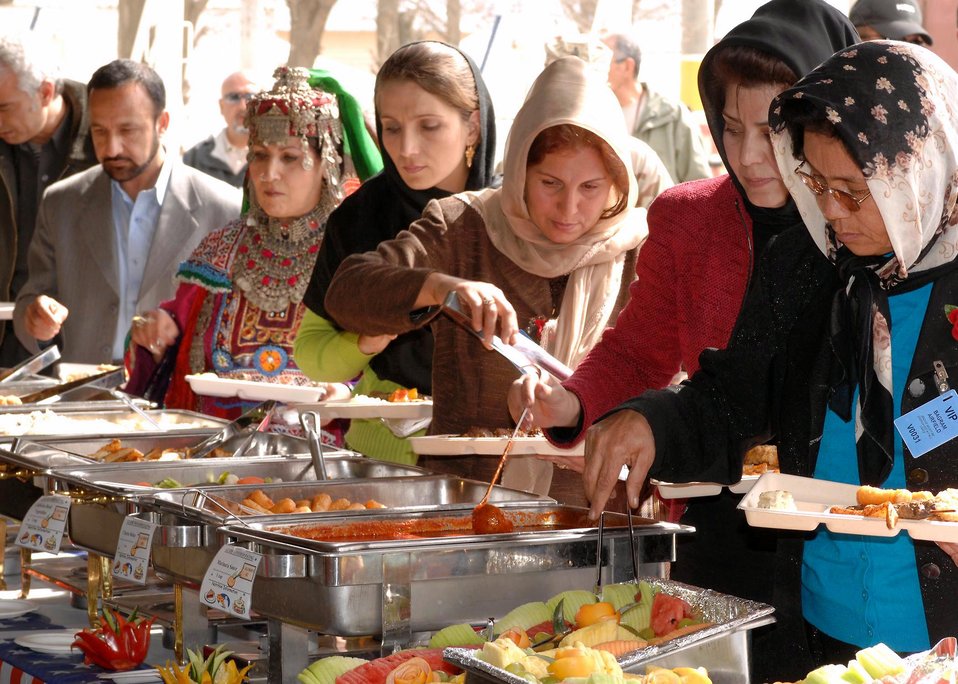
Bagram hosts International Women's Day

Members of the Afghan community prepare for lunch at an International Women's Day event to celebrate the world's women and acknowledge women's contributions to peace and security March 3 at Bagram Air Base, Afghanistan.